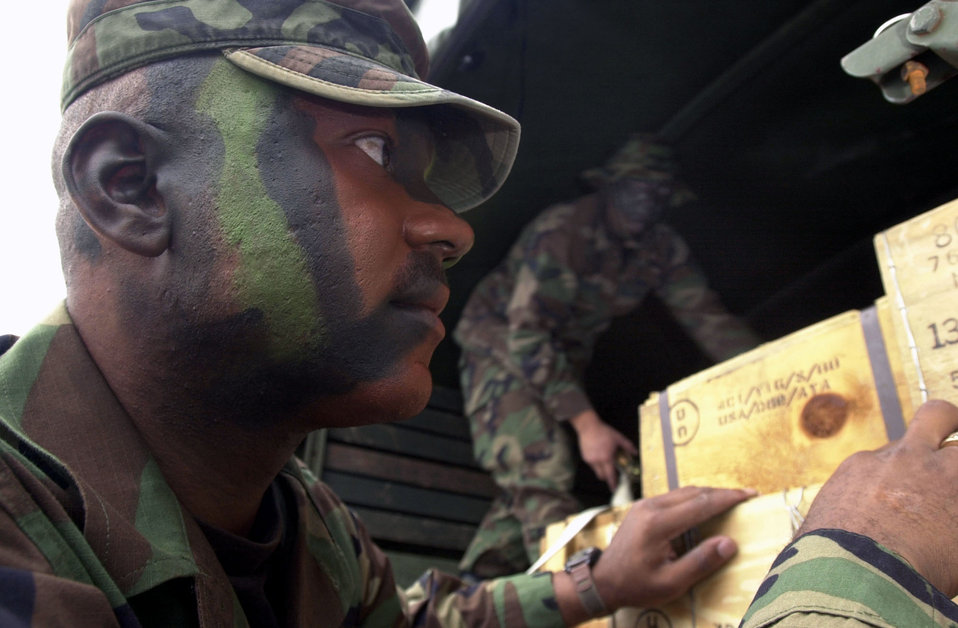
Scorpion strike

AVIANO AIR BASE, Italy -- Staff Sgt. Michael Johnson checks cases filled with explosive devices during a training exercise, Operation Scorpion Strike. In the background, Airman 1st Class Jeff Olofson loads cases of munitions onto a vehicle. Operation Scorpion Strike is a weeklong exercise that will test 603rd Air Control Squadron airmen's overall capability to deploy and work in a wartime environment. Johnson is the squadron's force-protection chief, and Olofson is a ground-radar systems specialist.